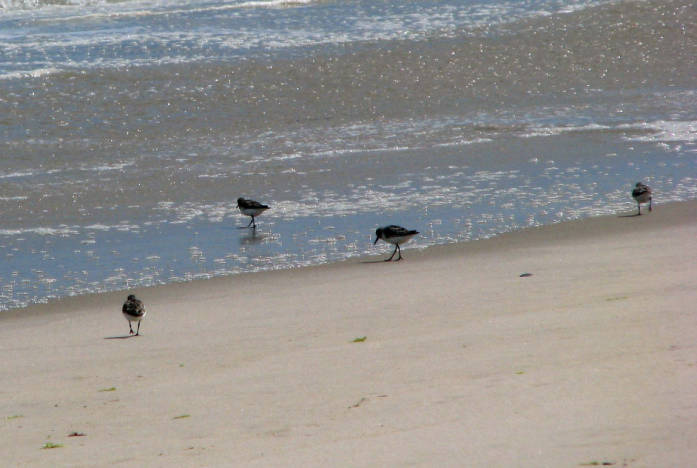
Sanderlings

Monomoy National Wildlife Refuge, MA.